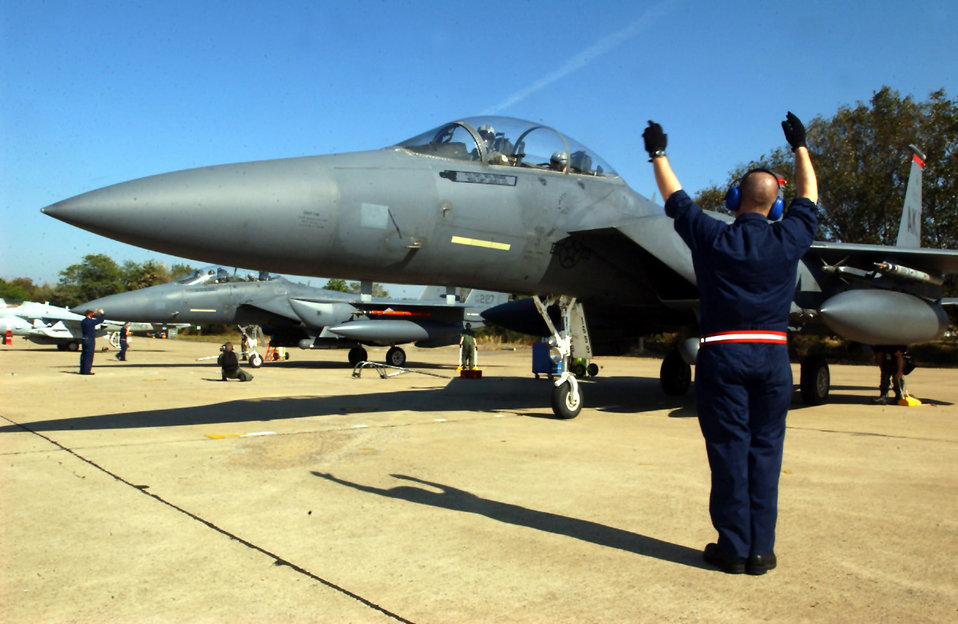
cope tiger

KORAT ROYAL THAI AIR FORCE BASE, Thailand (AFPN) -- A 3rd Aircraft Maintenance Squadron crew chief from Elmendorf Air Force Base, Alaska, guides an F-15E Strike Eagle from the 90th Fighter Squadron during exercise Cope Tiger '04 here. The 90th FS, also from Elmendorf AFB, is providing 12 Strike Eagles for the annual exercise which runs through Feb. 27.